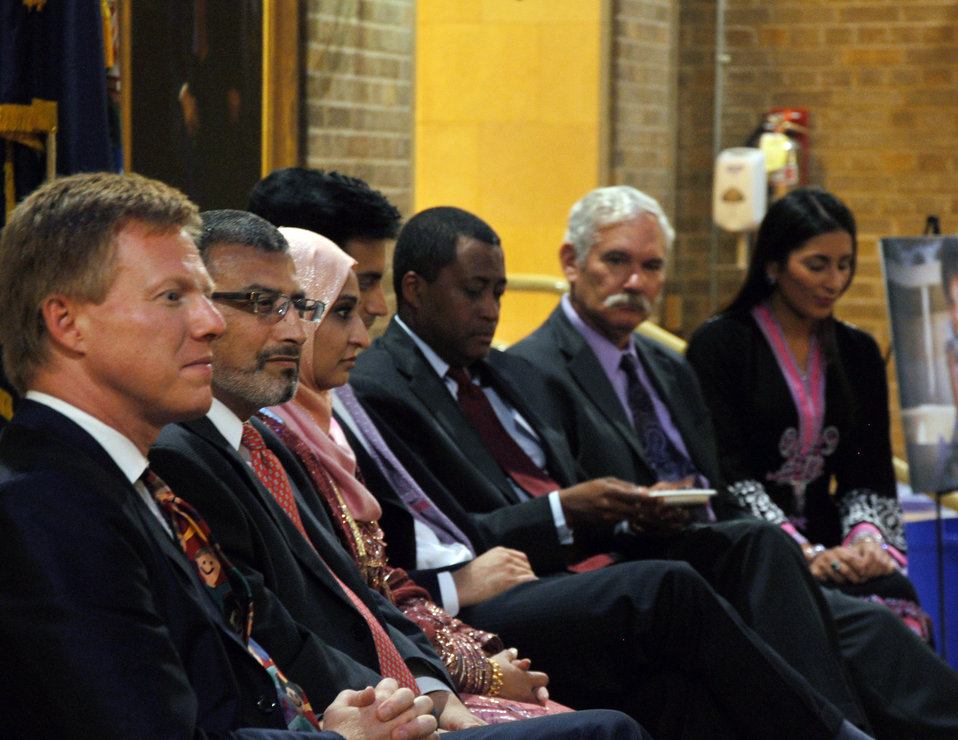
The U.S. Department of Agriculture (USDA) hosted its fifth annual Ramadan dinner on the USDA Whitten Building patio on Thursday, Aug. 1, 2013. For the second year in a row, Islamic Relief USA had the privilege of sponsoring the event’s dinner. Islamic Relief USA works with the USDA as well as numerous other organizations to help alleviate hunger. In one joint initiative with the USDA, IRUSA helps support community organizations across America that provide summer meals to low-income youth who rely on free or reduced-cost school lunches during the school year. (L to R StrikeForce Initiative Director Max Finberg, IRUSA President Dr. Abed Ayoub, Fahmida Chhipa, Ali Zaidi, Agriculture Assistant Secretary for Civil Rights Dr Joe Leonard, Acting Agriculture Deputy Secretary Michael Scuse, and USDA White House Liaison office employee Sanah Baig)